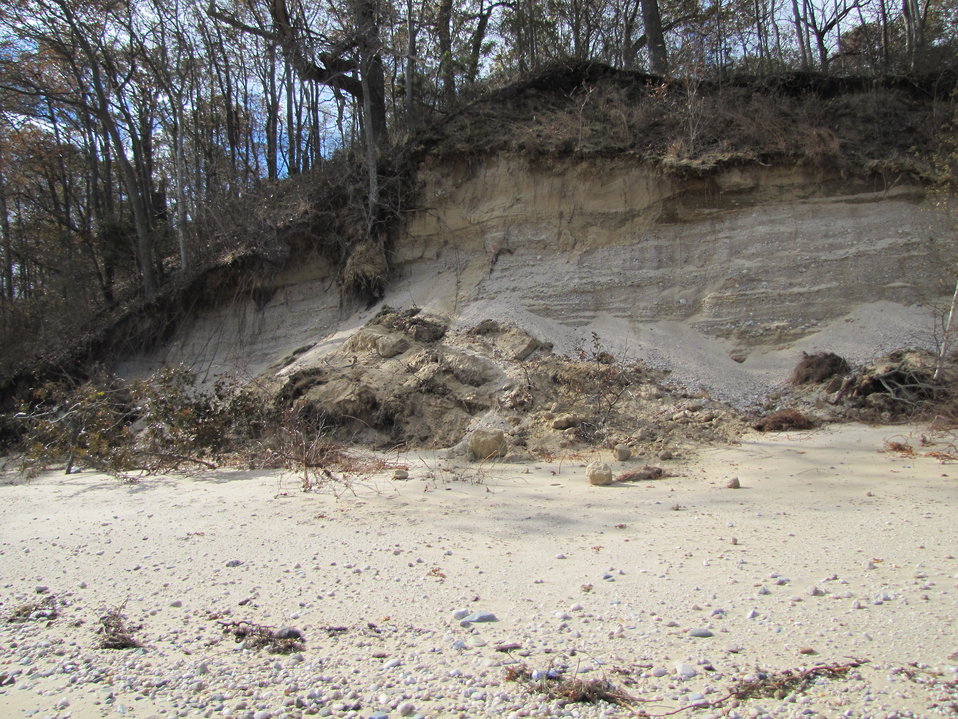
Dune damage at Target Rock National Wildlife Refuge (NY)

Extensive dune damage at Target Rock National Wildlife Refuge, part of the Long Island National Wildlife Refuge Complex.